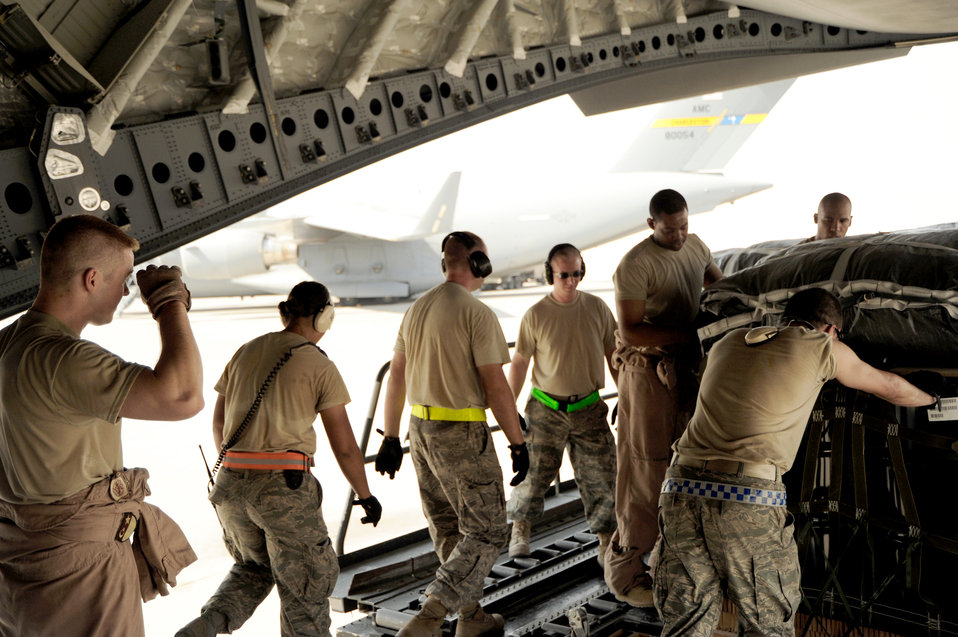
Operation Everest

Airmen pull bundles of JP-8 fuel onto a C-17 Globemaster III before an airdrop mission Aug. 13, 2010, at an air base in Southwest Asia. The drop was part of Operation Everest, a week-long effort delivering 837 of bundles of supplies and equipment to forward operating bases across the area of responsibility.